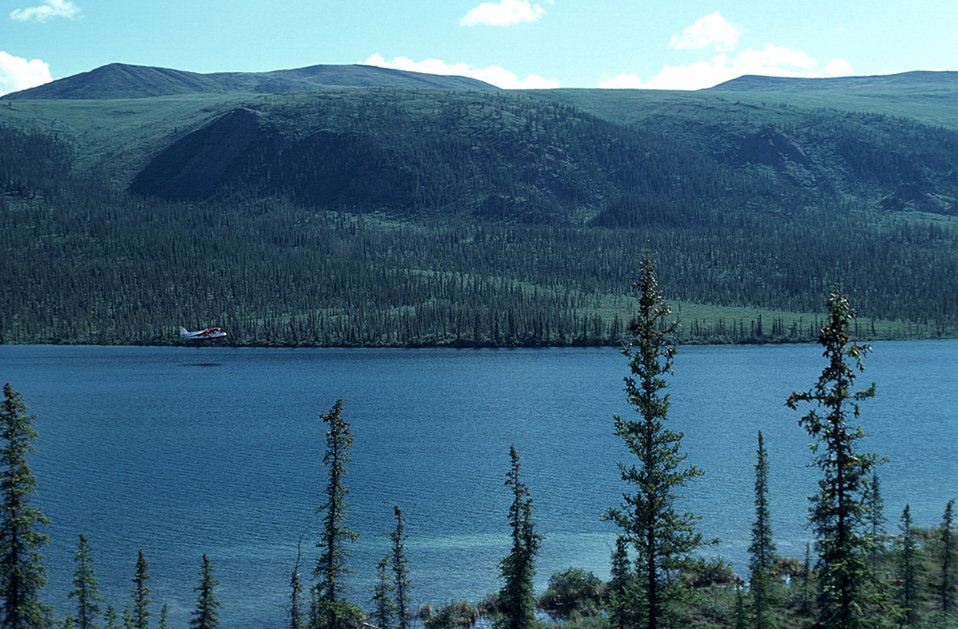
A float plane landing on Blackfish Lake

ANWR; Arctic National Wildlife Refuge